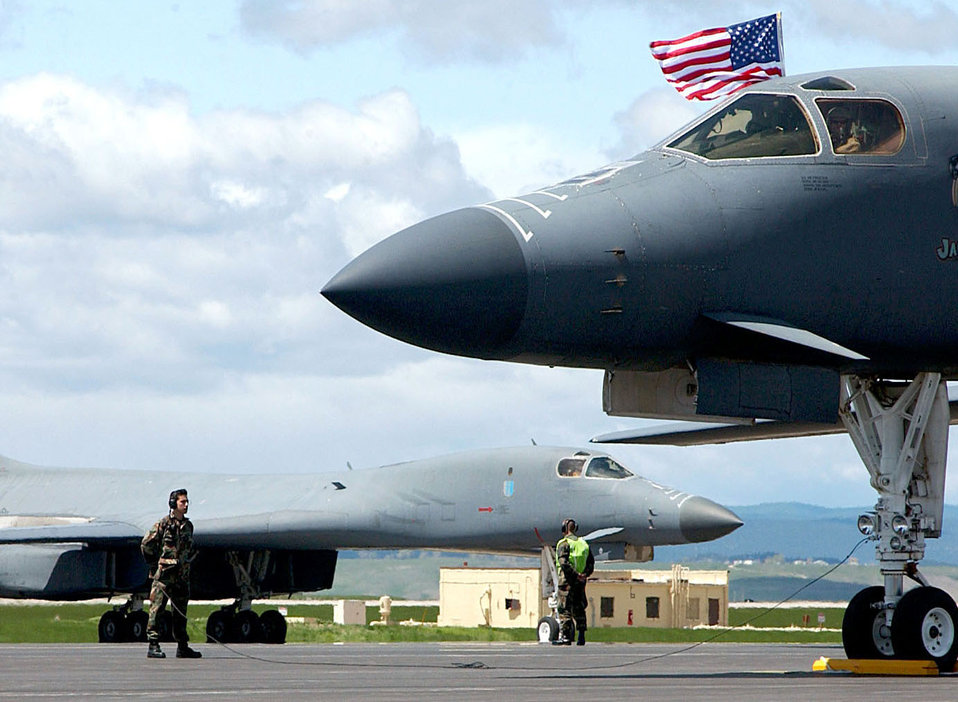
Lancers arrive home

OPERATION IRAQI FREEDOM -- A B-1B Lancer from the 37th Bomb Squadron taxis in to Ellsworth Air Force Base, S.D., May 13, 2003. The bomber is returning from a deployment in support of Operation Iraqi Freedom.